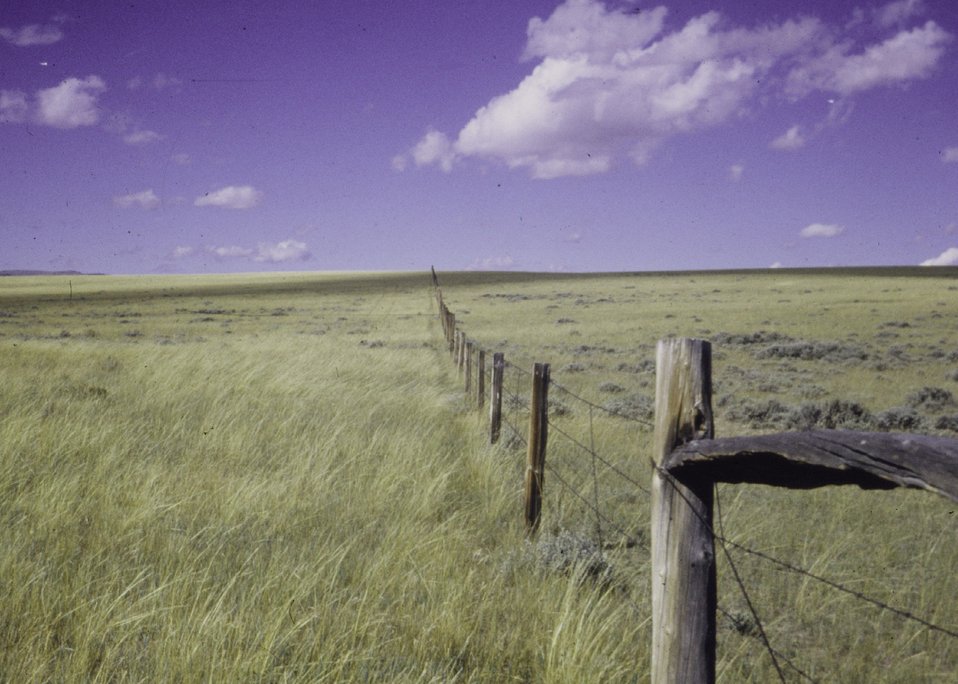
Rangeland, pastures in central Wyoming.